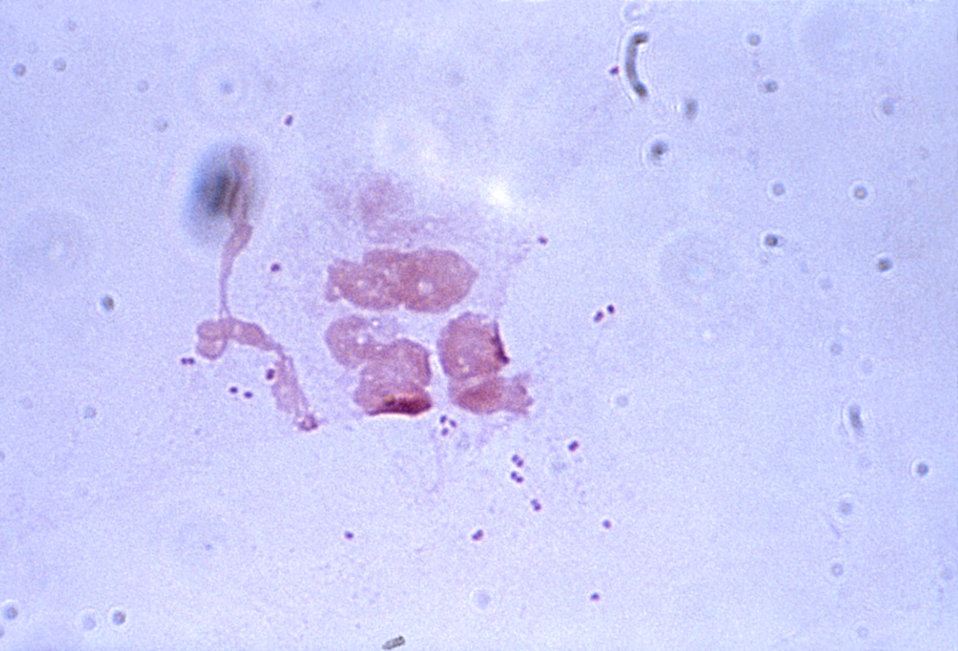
This micrograph revealed the presence of a number of extracellular N. gonorrhoeae diplococci, and white blood cells.